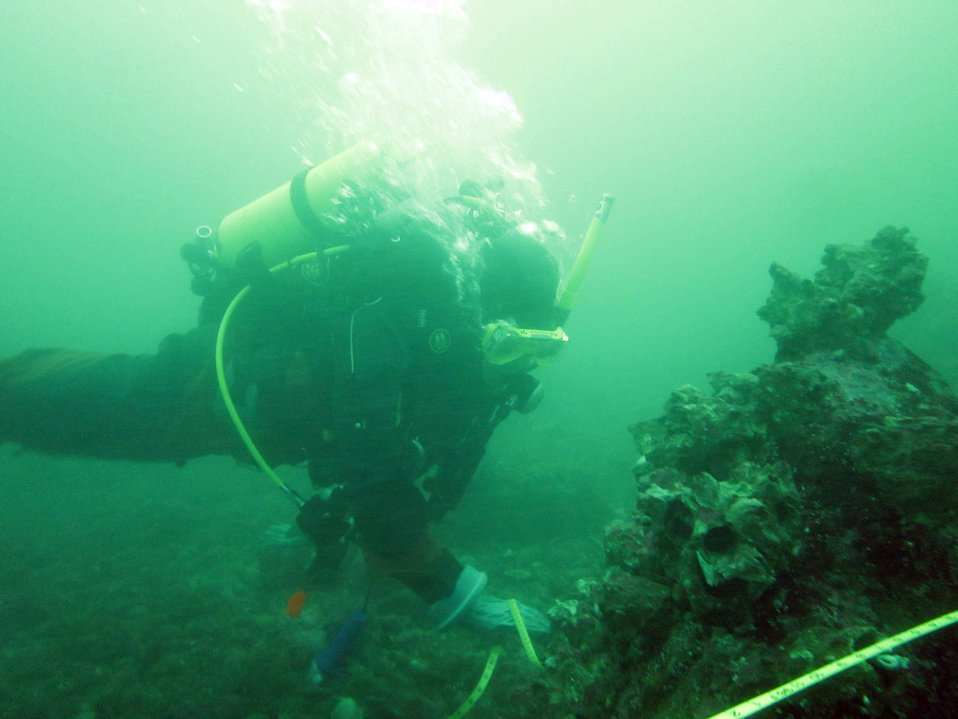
February 6, 2013 EPA Divers help with abandoned fishing gear in Puget Sound

Decades of commercial and recreational fishing has left Puget Sound littered with massive amounts of abandoned fishing gear. The nets, ropes, and lines take their toll on marine life and degrades habitat, they have even become a hazard to tidal power stations.

The Northwest Straights Commission, Marine Conservation Initiative (Northwest Straights), has been assessing the ecological health of Northwest inland marine waters. Northwest Straights has been working to survey and remove this derelict fishing gear from the Sound with EPA’s help.

Where do you begin across such a large body of water? The primary goal is to remove any nets that are located by sonar. However, nets move and sometimes the sonar images of potential nets turn out to be other things. The EPA Region 10 dive team has been helping to make the process more efficient by prescreening sites and providing maps of confirmed nets to speed up the removal effort.

EPA receives three types of information related to potential derelict net locations: 1) side-scan sonar imagery and GPS coordinates where bottom topography and bathymetry show a high potential to snag abandoned nets; 2) reports from fishermen and other reputable sources that have direct knowledge of net locations; and, 3) shoreline reaches with high potential for hosting derelict gear. Divers are deployed in pairs to determine if derelict nets are present. When lost gear isn’t found, that helps to narrow the focus and limited funding on other sites. For more information: www.derelictgear.org/ and www.nwstraits.org/

Join the conversation on www.facebook.com/EPADivers